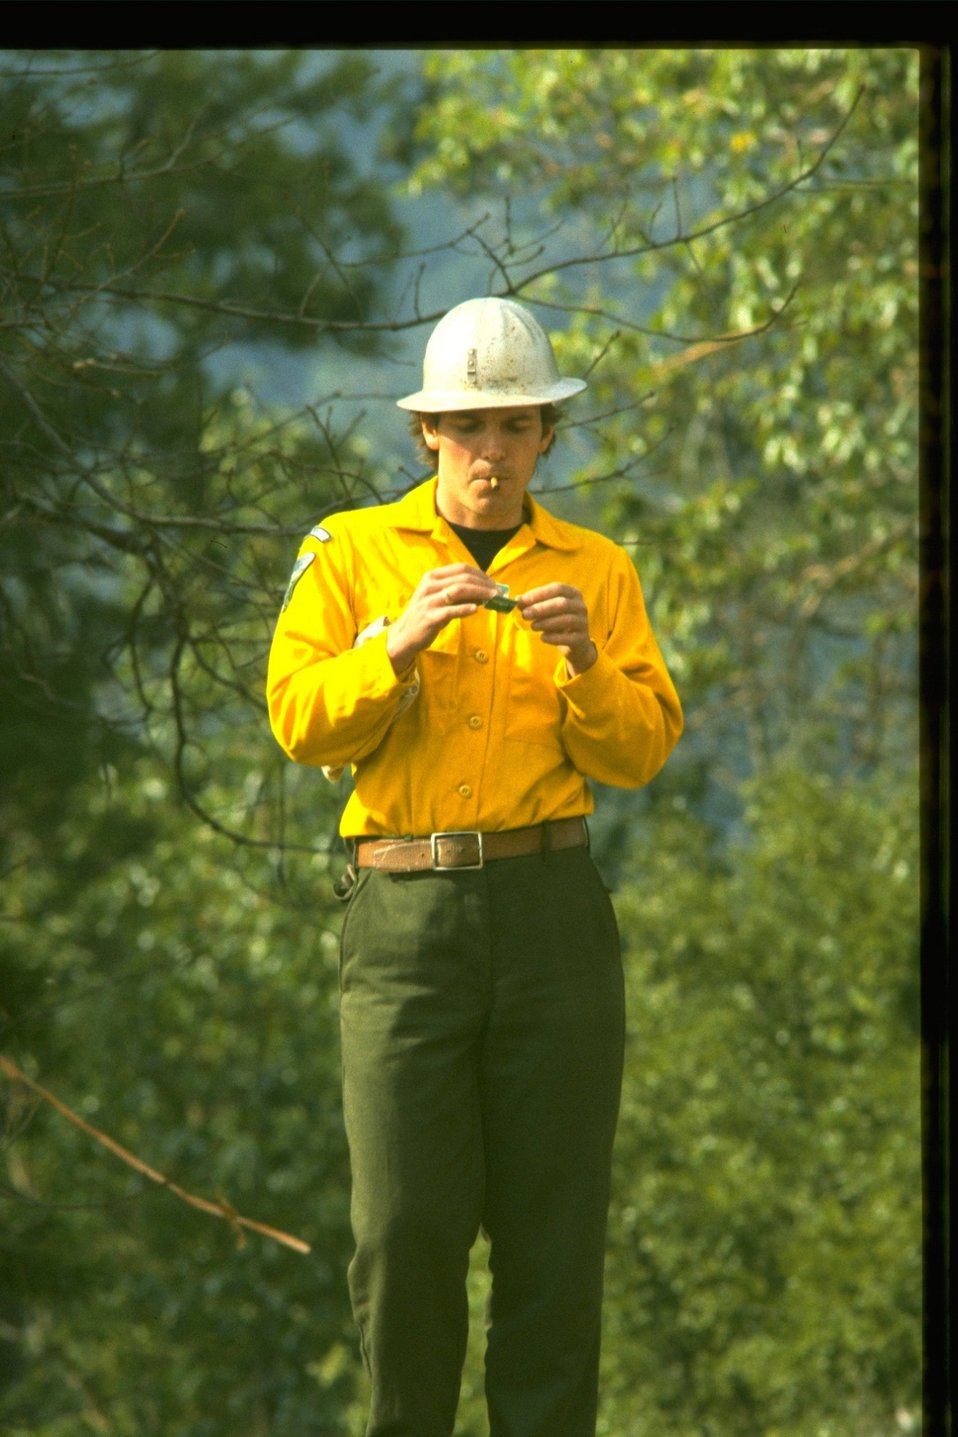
Firefighter standing in the woods.